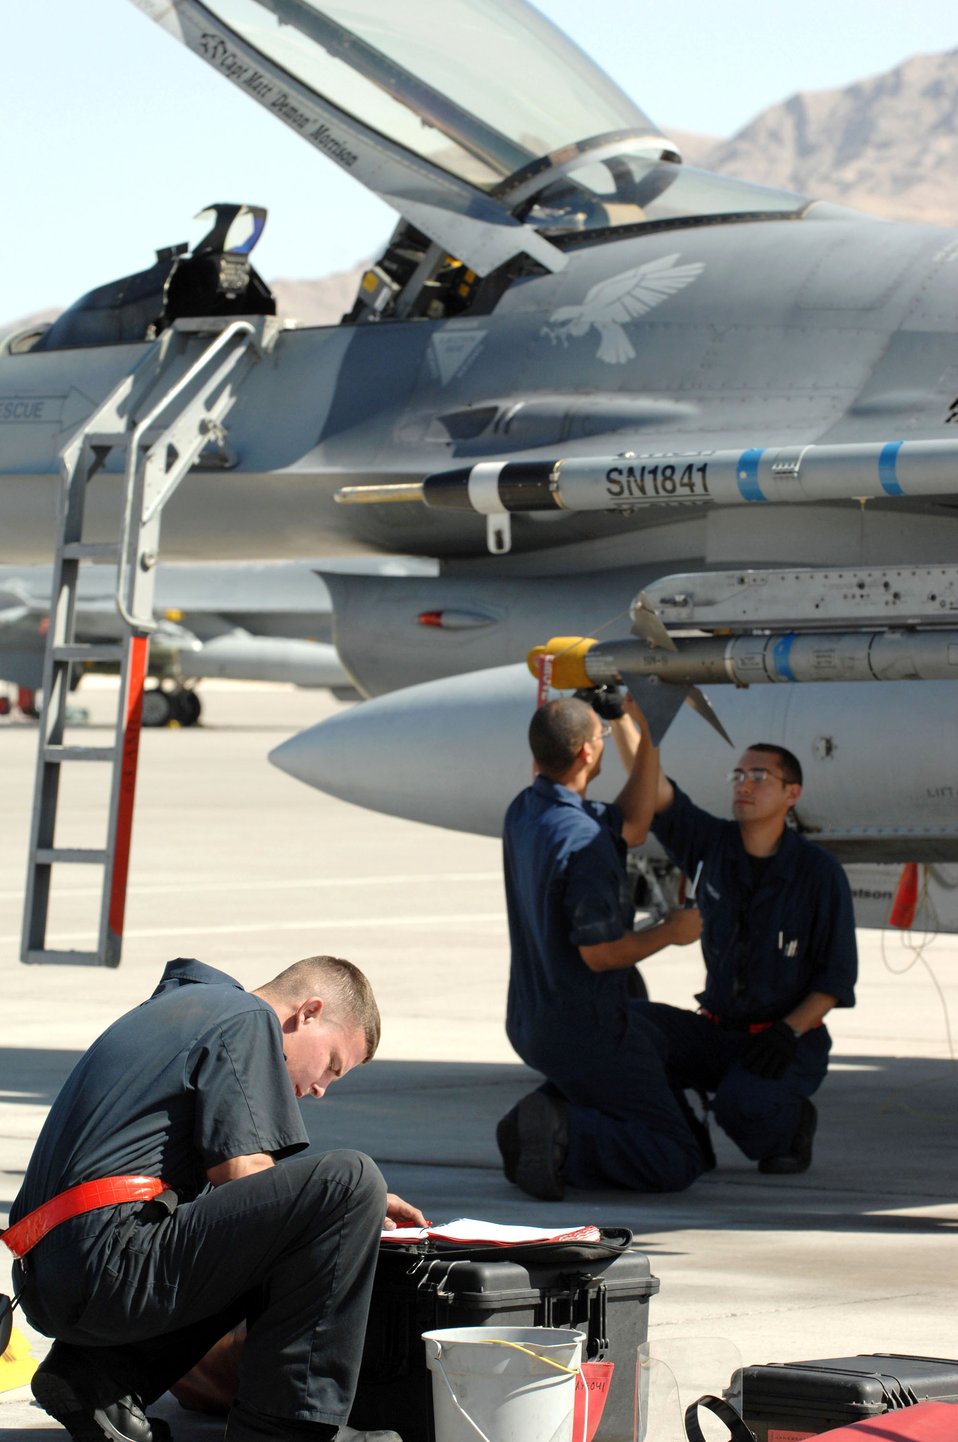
Falcons support Eagle school

Senior Airman Michael Blankenship (left) fills out F-16 Fighting Falcon post flight forms while Senior Airmen Gabriel Sheppard and Curtis Morgan change an argon bottle on an AIM-9 missile Oct. 18 at Nellis Air Force Base, Nev. The three Airmen are crew chiefs assigned to the 63rd Fighter Squadron from Luke AFB, Ariz. The 63rd FS is at Nellis AFB supporting the F-15 Eagle Weapons School Instructor Course in an adversary tactics role.